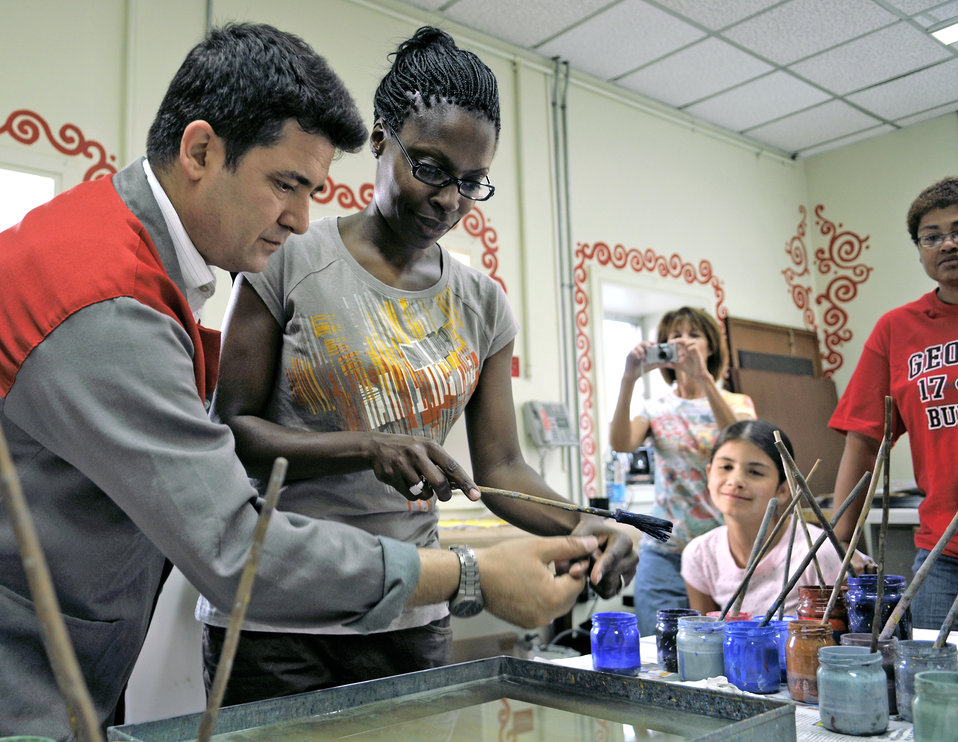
Learning Turkish art

Senior Master Sgt. Christal Jackson receives instruction from Mesut Dikel during an Ebru art class June 24 at the Arts and Crafts Center at Incirlik Air Base, Turkey. Mr. Dikel has been creating Ebru art, a unique Turkish art form, for nearly 24 years. Sergeant Jackson is the 39th Contracting Squadron superintendent.